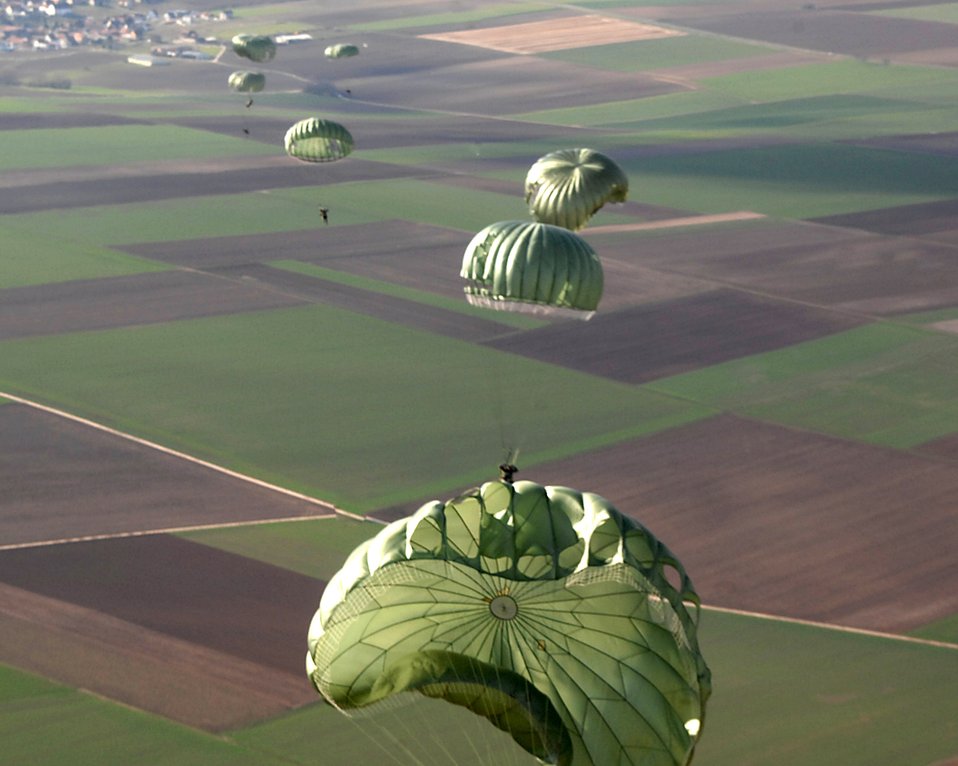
Airborne over Deutschland

Airmen of the 786th Security Forces Ravens from Sembach Annex, Germany and Soldiers from the 5th Quarter Master Arial Delivery crew open their parachutes March 7 as they execute an airborne jump exercise over southwestern Germany.